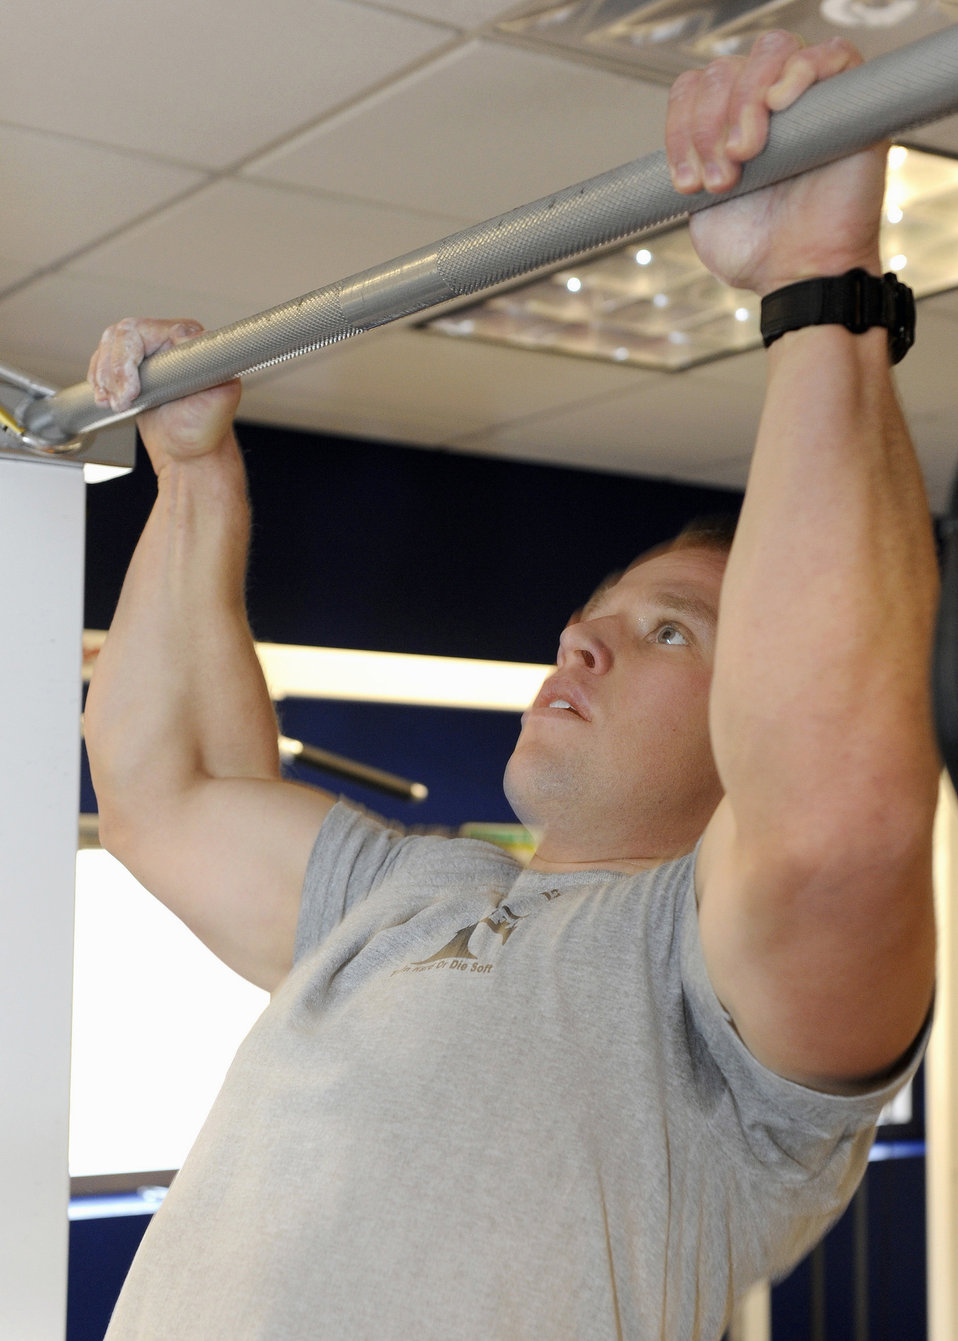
Murph test

Dan Sanders performs one of 100 pull-ups during The Murph competition Dec. 10, 2010, at the Schriever Air Force Base Fitness Center. Mr. Sanders completed the Murph in 43 minutes, 18 seconds, earning fourth place.